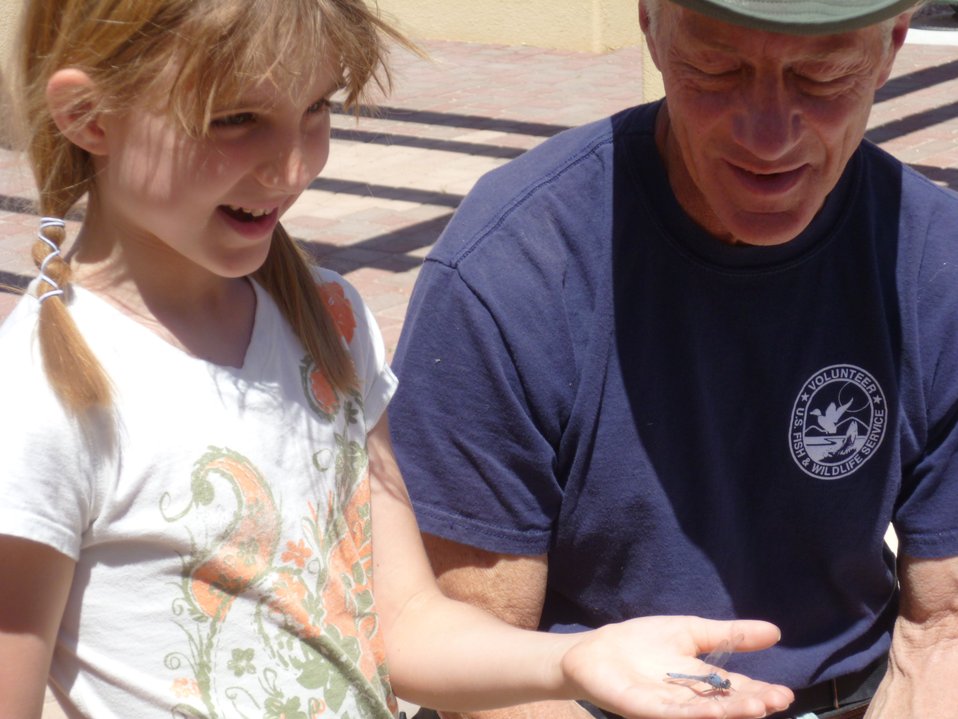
Western Pondhawk dragonfly

A Western Pondhawk dragonfly finds a friendly perch.